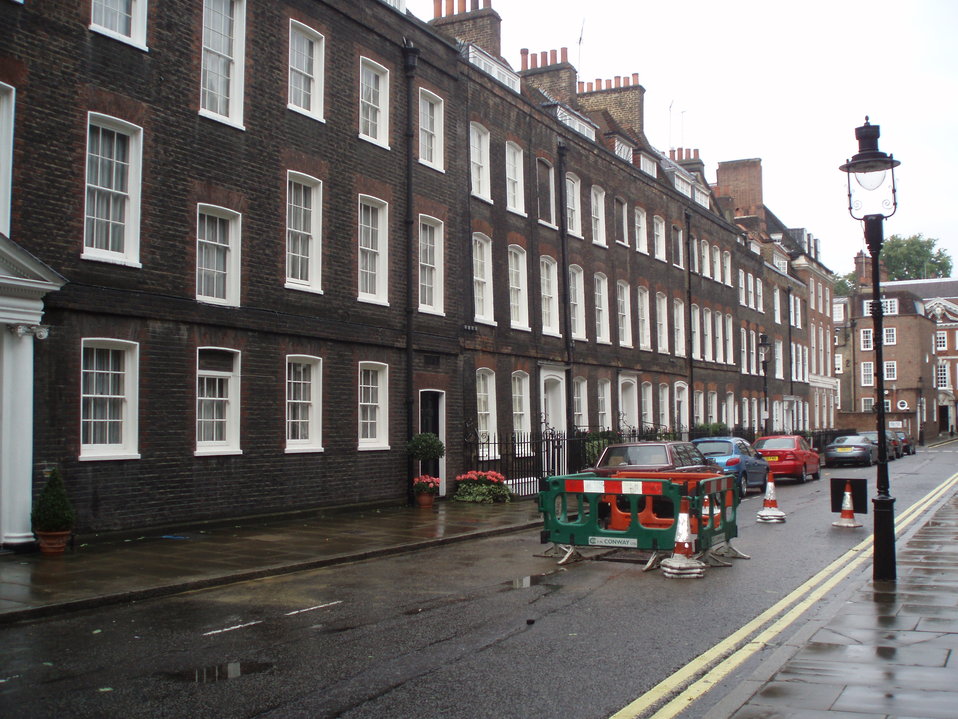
Photo takn on 23rd August 2007